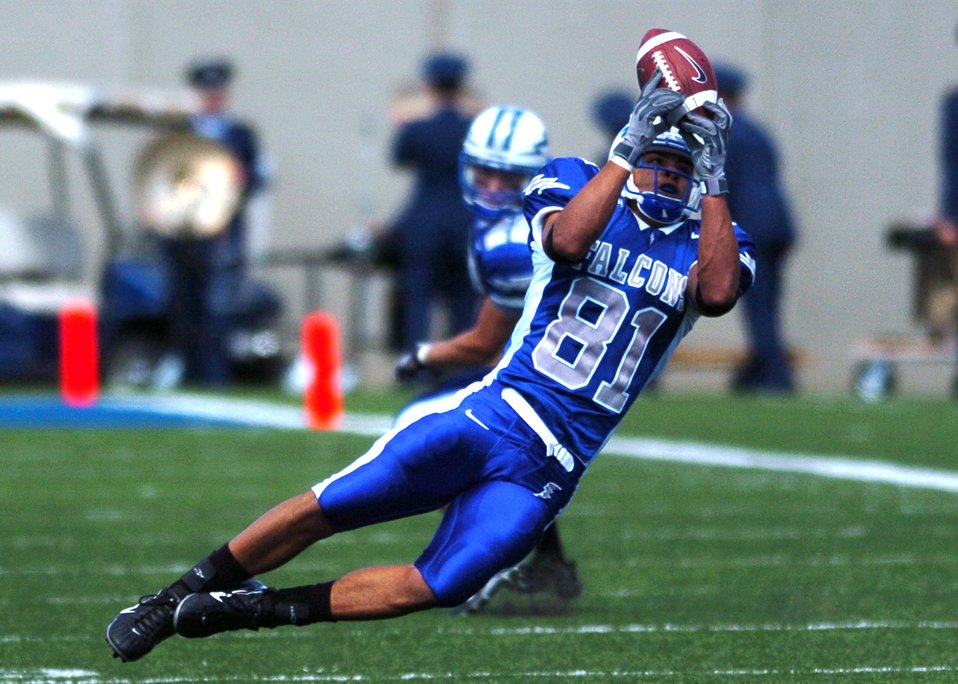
Air Force can't catch Navy

Air Force wide receiver Victor Thompson goes airborne Saturday to bring down a third quarter pass from quarterback Shaun Carney. The Falcons’ 119 total passing yards was not enough to ensure a win over Navy. Navy won, 24-17.